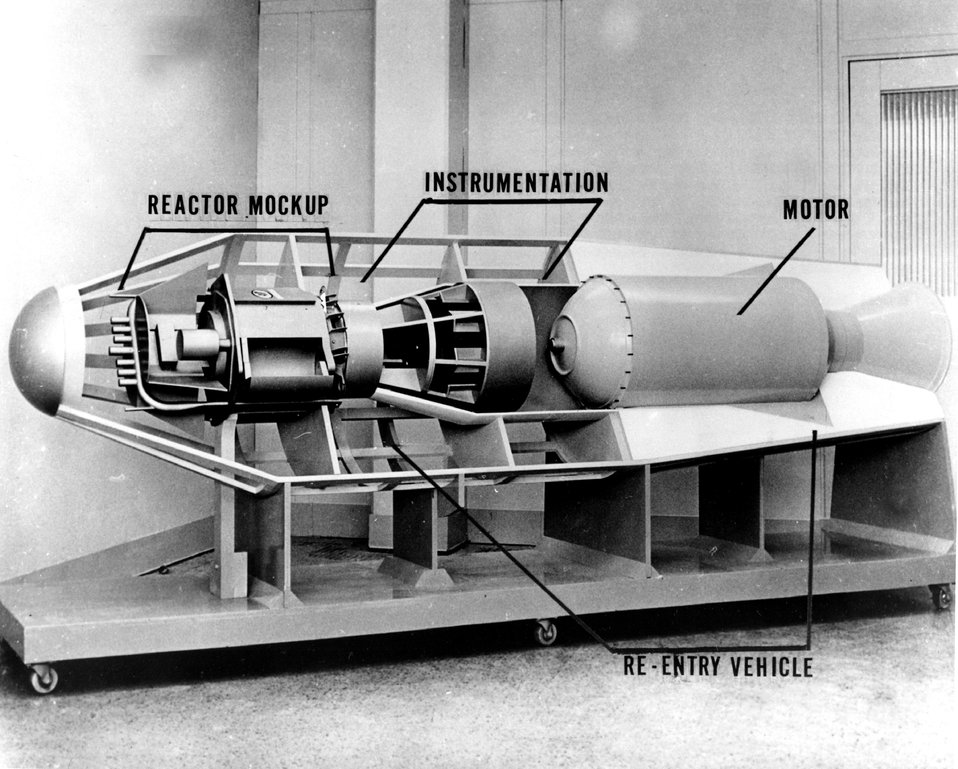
Mockup of the fourth stage of the Scout launch vehicle which launched the re-entry vehicle, including a reactor mockup, for AEC's Re-entry Flight Demonstration-1 (RFD-1) from Wallops Island, Virginia. c. 1963